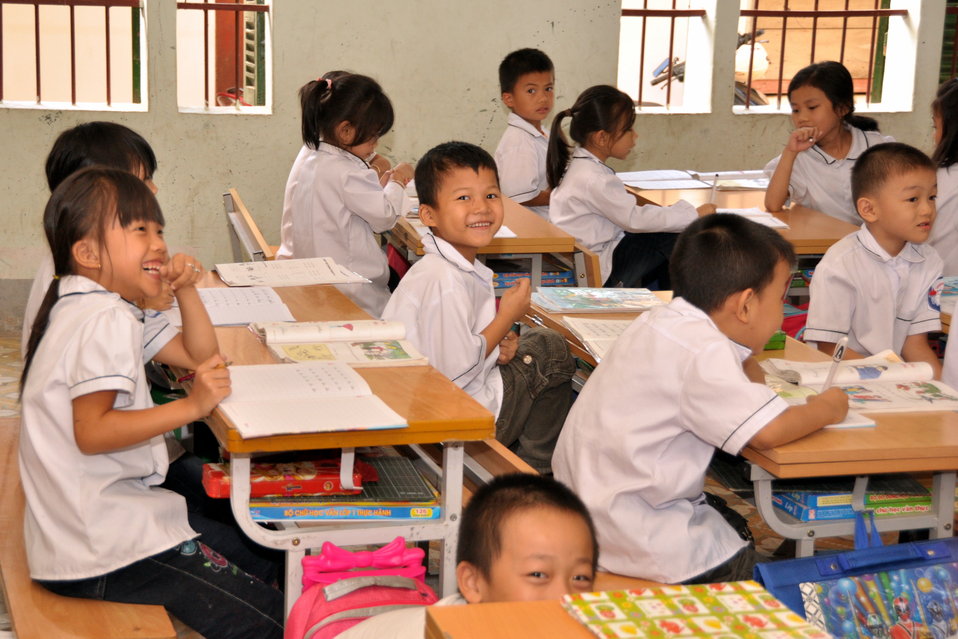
School children receive a dose of deworming medicine in Dien Bien